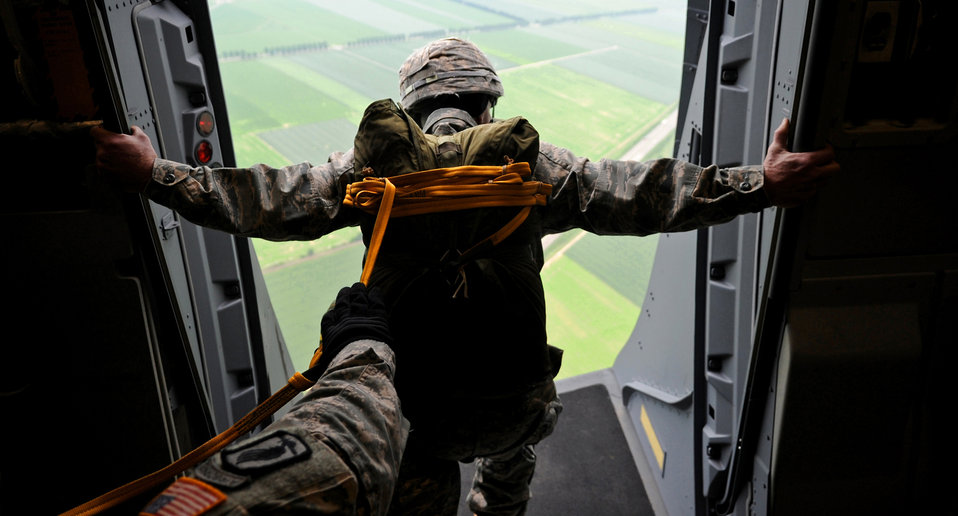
Ramstein Airmen participate in NATO jump

Col. Timothy Brown performs pre-jump checks on a C-17 Globemaster III before executing an airborne jump June 15, 2010 over Alzey, Germany. Colonel Brown is the 435th Contingency Response Group commander.